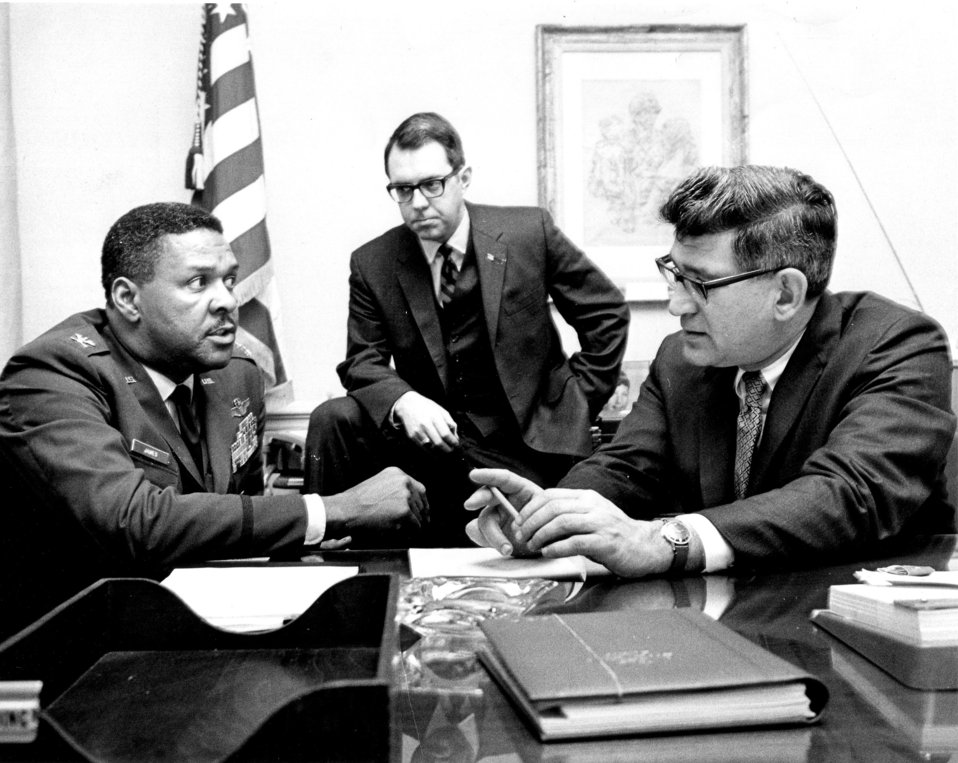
Daniel Chappie James

Col. Daniel